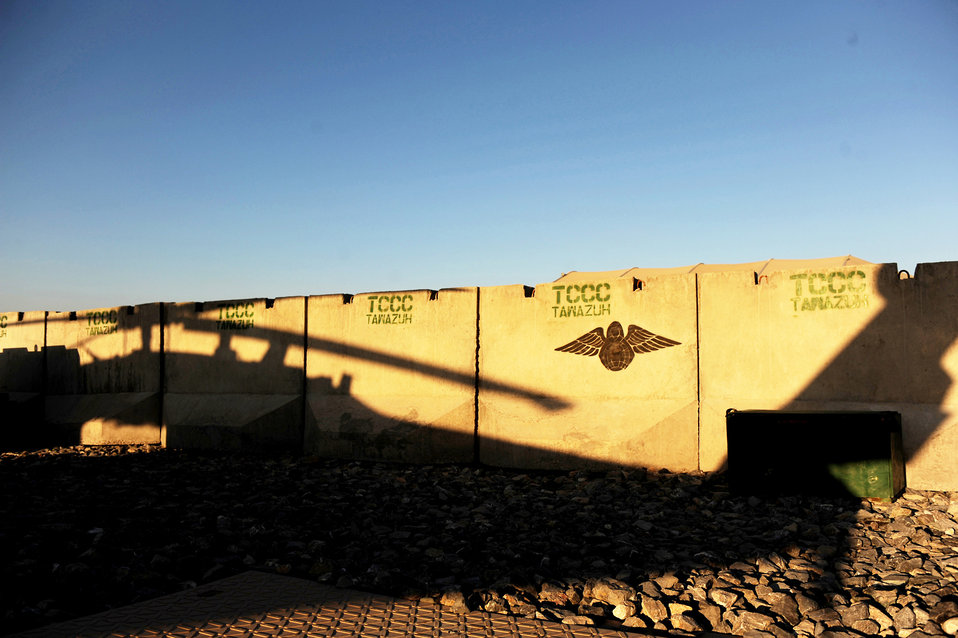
Total-Force Airmen to the rescue in Afghanistan

An HH-60G Pave Hawk casts a shadow on a concrete wall Jan. 9, 2010, at Kandahar Airfield, Afghanistan. The helicopter is postured to take-off at a moment?s notice in response to medical evacuation requests.